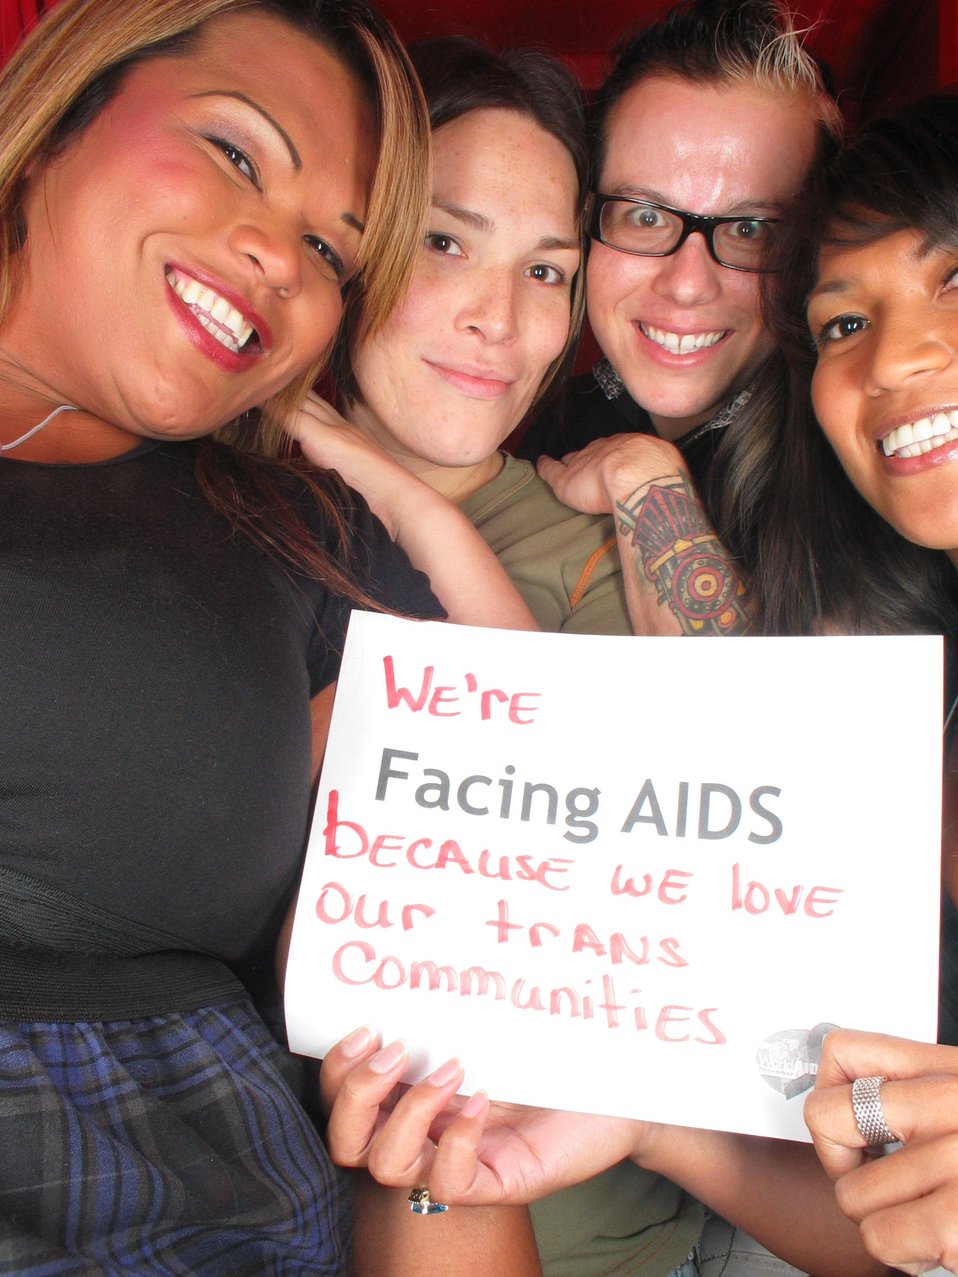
We're Facing AIDS because we love our trans communities